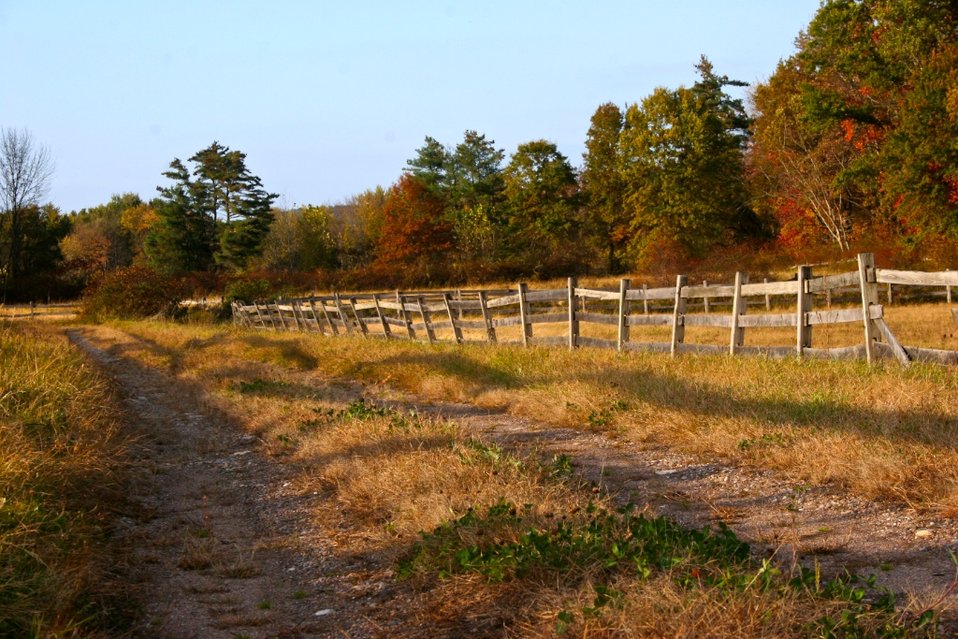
Fenced Pathway

A pathway within the Fort River Division of the Silvio O. Conte National Fish and Wildlife Refuge in Hadley, MA.